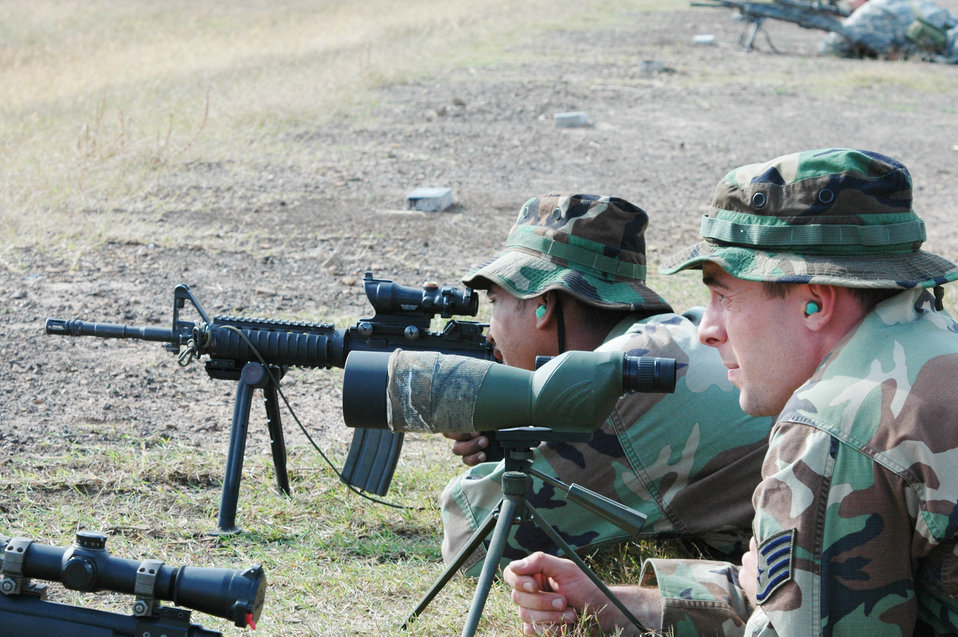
In my sight

Sniper team member Staff Sgt. John Patnaude (right) spots targets for shooter Senior Airman Michael Blake during a joint sniper competition at Travis Air Force Base, Calif. Both Airmen are assigned to the 570th Global Mobility Readiness Squadron.